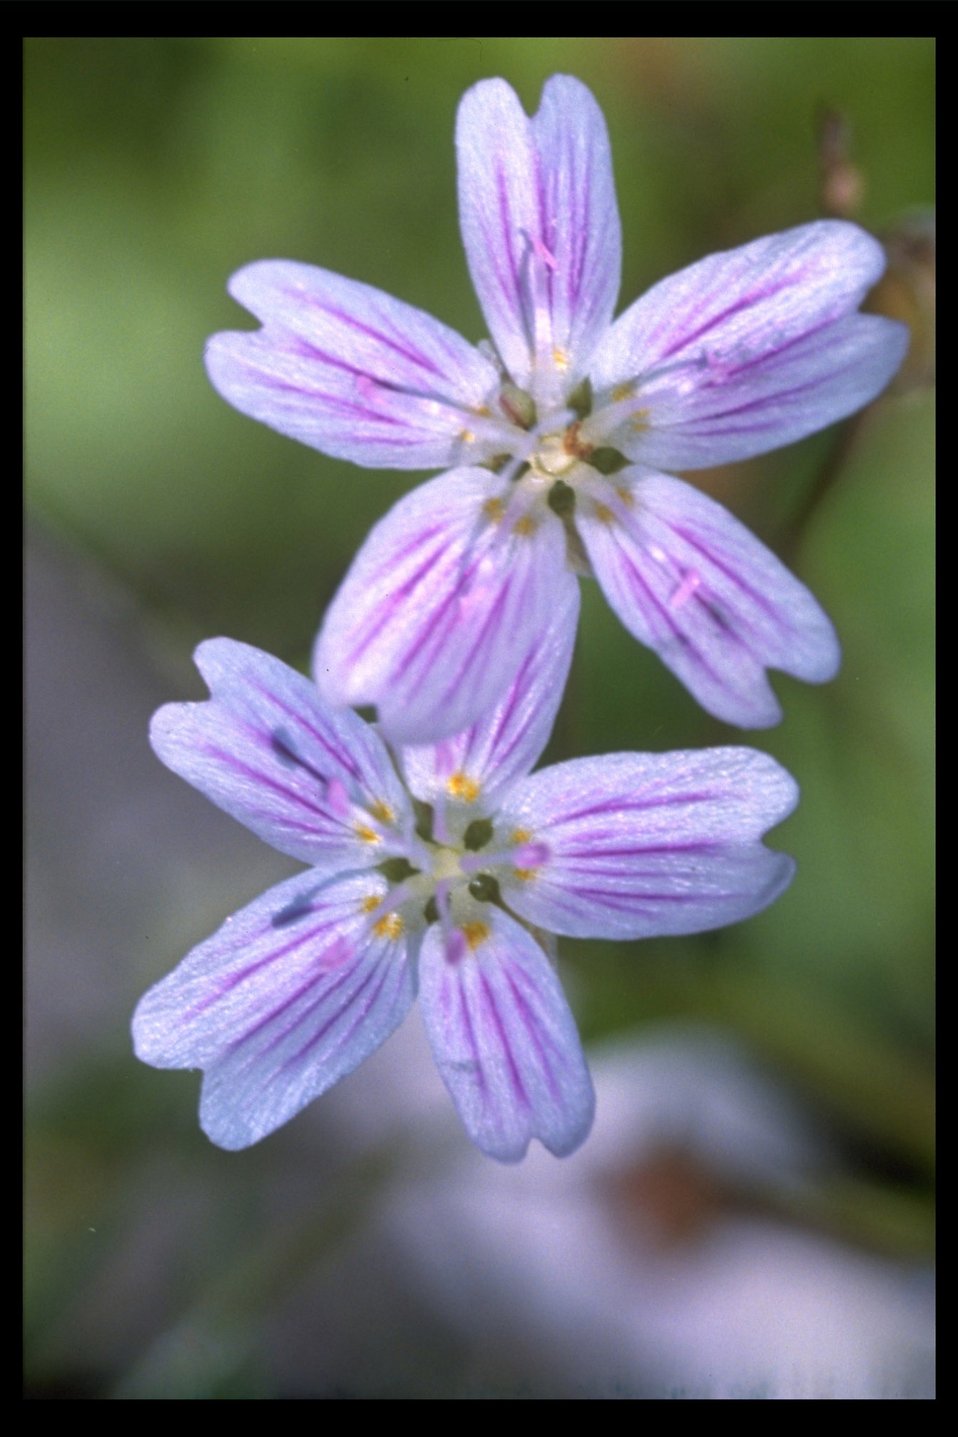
Western Spring Beauty (Claytonia lancelota) in the Goolaway Gap.